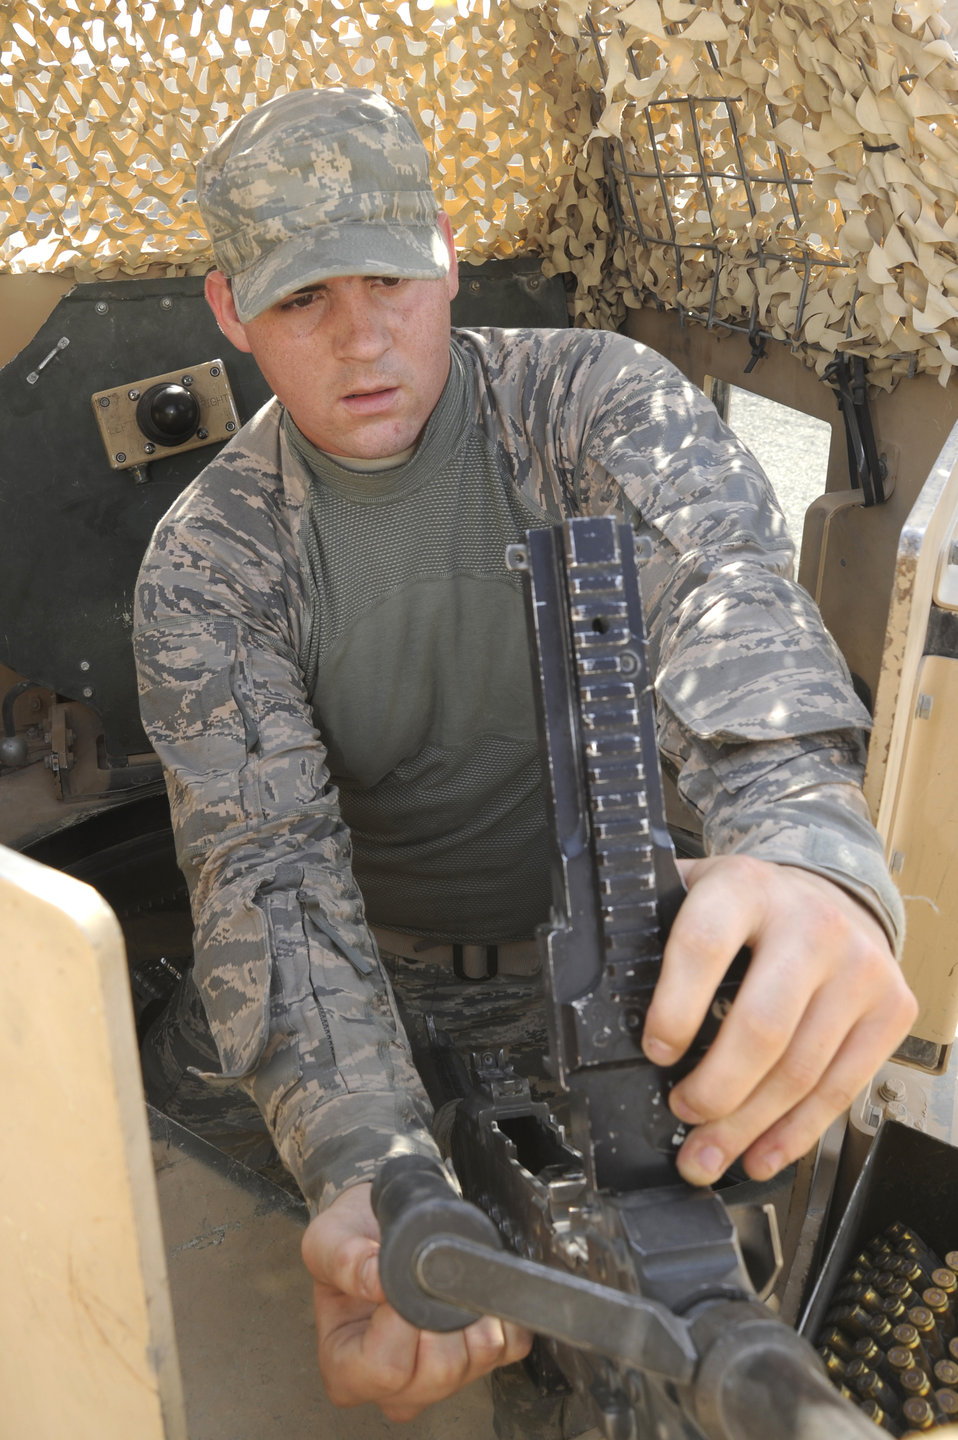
Security forces Airmen help secure future of Iraq

Senior Airman Jason Gregory performs maintenance checks on a machine gun mounted in a Humvee gunner turret Aug. 22, 2009, at Camp Stryker, Iraq. Airman Gregory is a 732nd Expeditionary Security Forces Squadron Detachment 2 Police Transition Team gunner and deployed from Langley Air Force Base, Va. He is a native of New Caney, Texas.